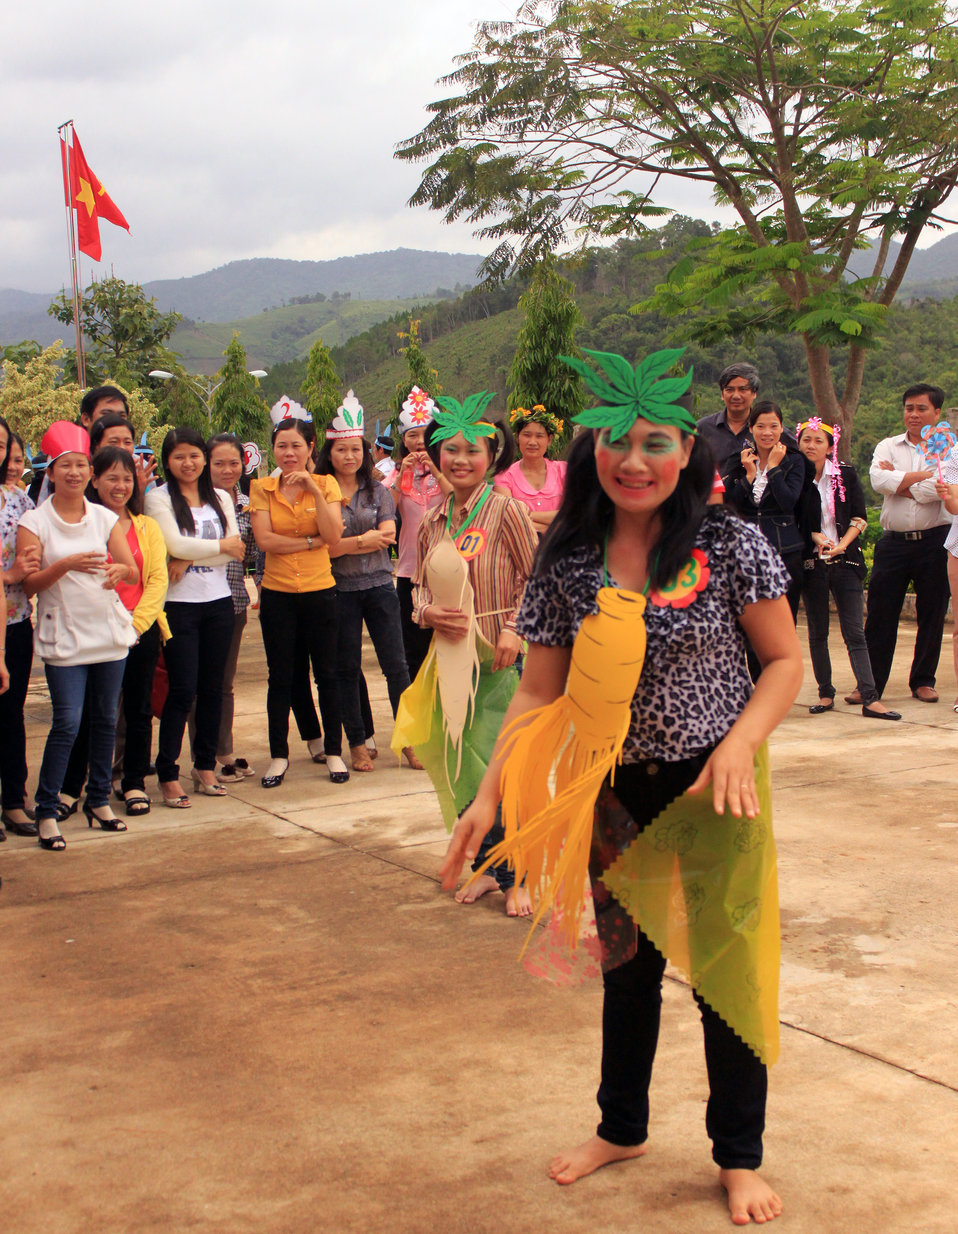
Teachers in Kon Tum practice what they learned from USAID-funded intensive training courses